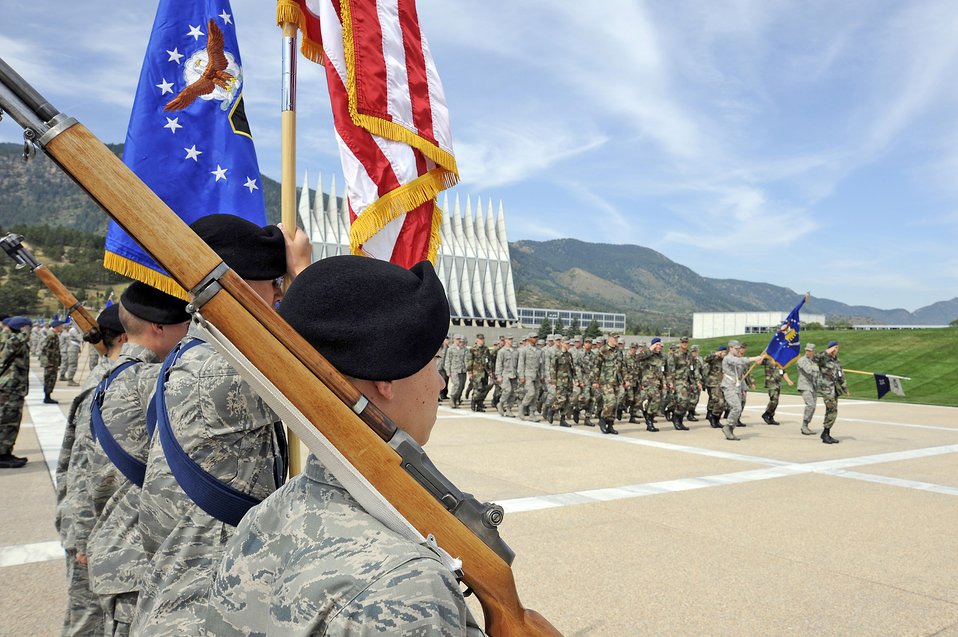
Birthday parade

U.S. Air Force Academy Cadet Squadron 35 passes the Cadet Honor Guard during a parade at the U.S. Air Force Academy in Colorado Springs, Colo., celebrating the Air Force's 62nd birthday Sept. 18, 2009.